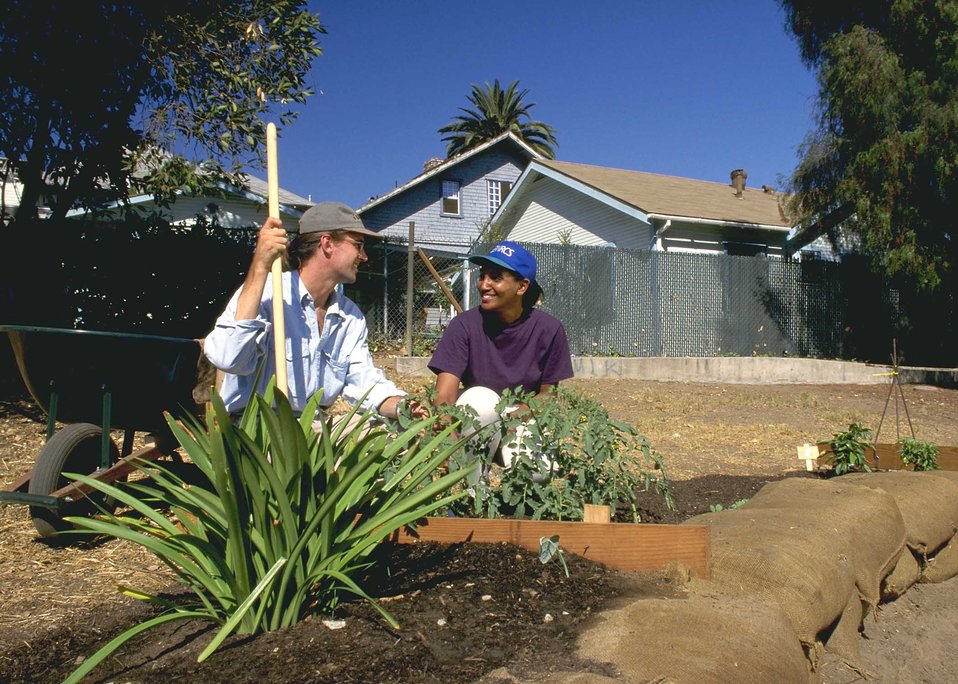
Chelsea Cochrane, NRCS, discusses the landscaping plan for a community garden in the Echo Park area of Los Angeles, CA.